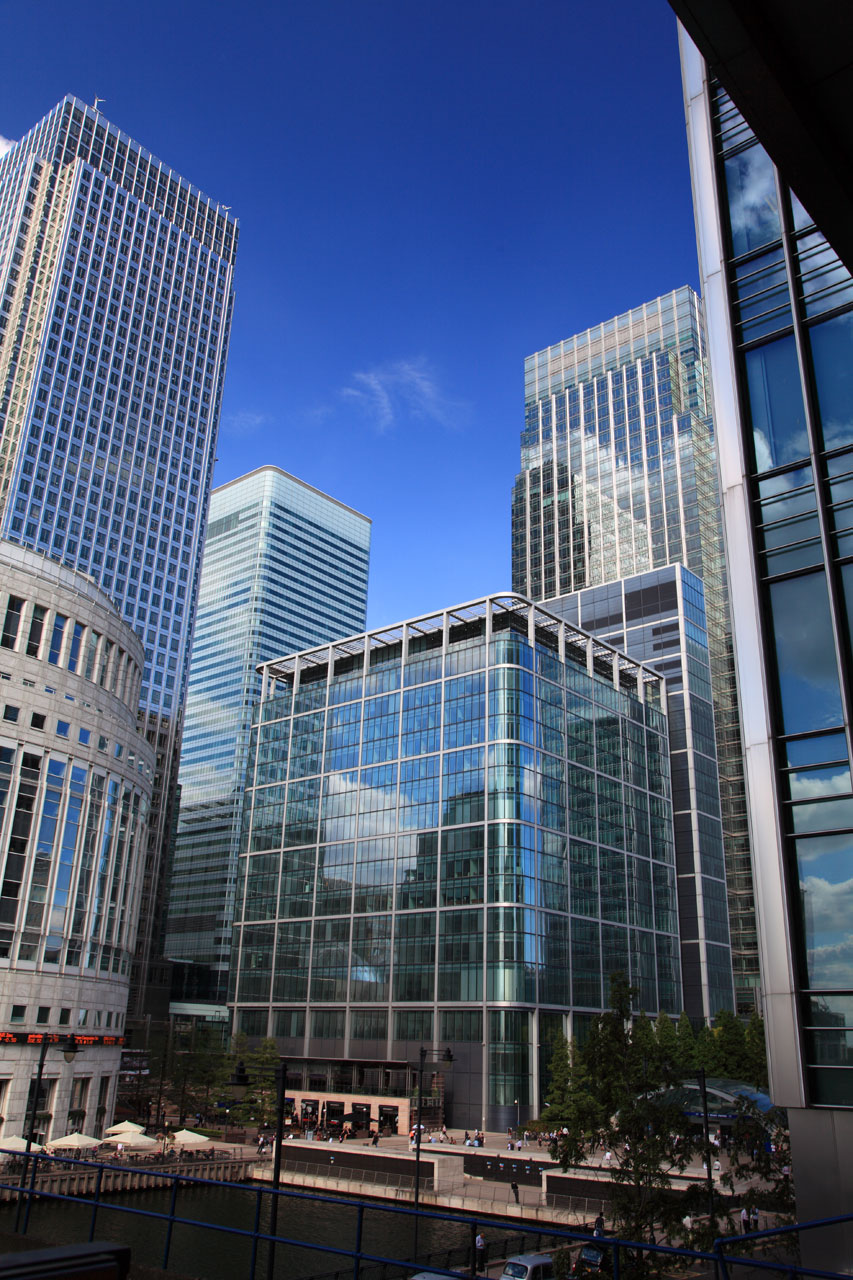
Modern office buildings in london.